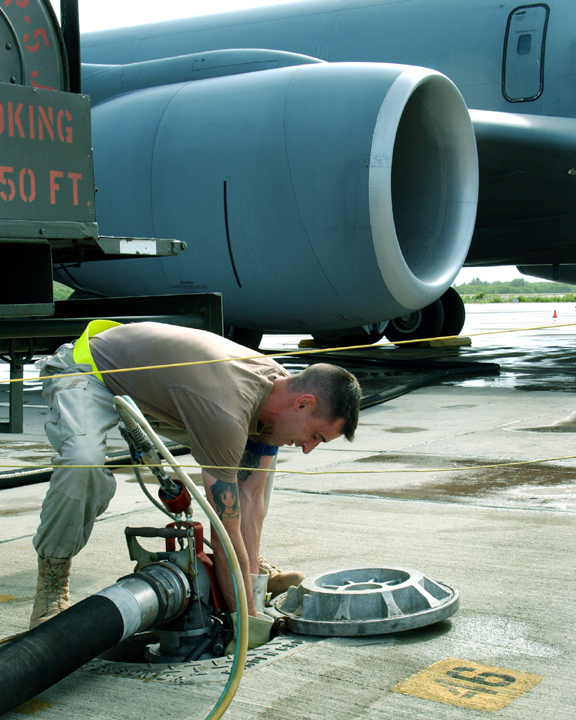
Fuels Airmen

OPERATION ENDURING FREEDOM -- Senior Airman Thomas Haefliger hooks up sensing lines to a refueling outlet before refueling a KC-135 Stratotanker. The fuels element Airmen here have issued more than 10 million gallons of aviation fuel. Airman Haefliger is a refueling unit operator with the 40th Expeditionary Logistics Readiness Flight fuels element. He is deployed from Fairchild Air Force Base, Wash.